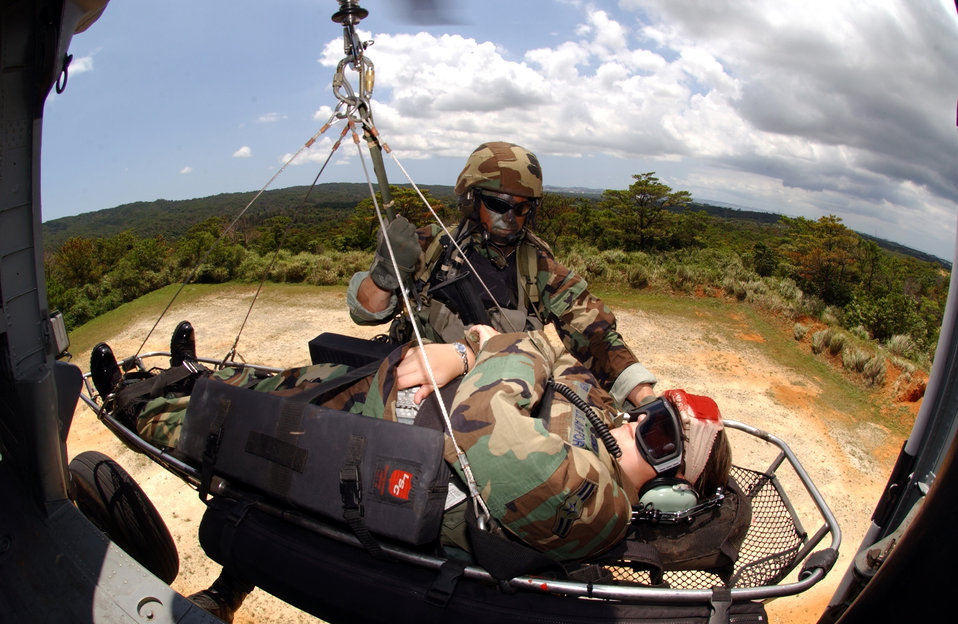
Rescue me

KADENA AIR BASE, Japan -- Staff Sgt. William Moore, 31st Rescue Squadron Pararescueman, performs a survivor hoist recovery as part of a training exercise.